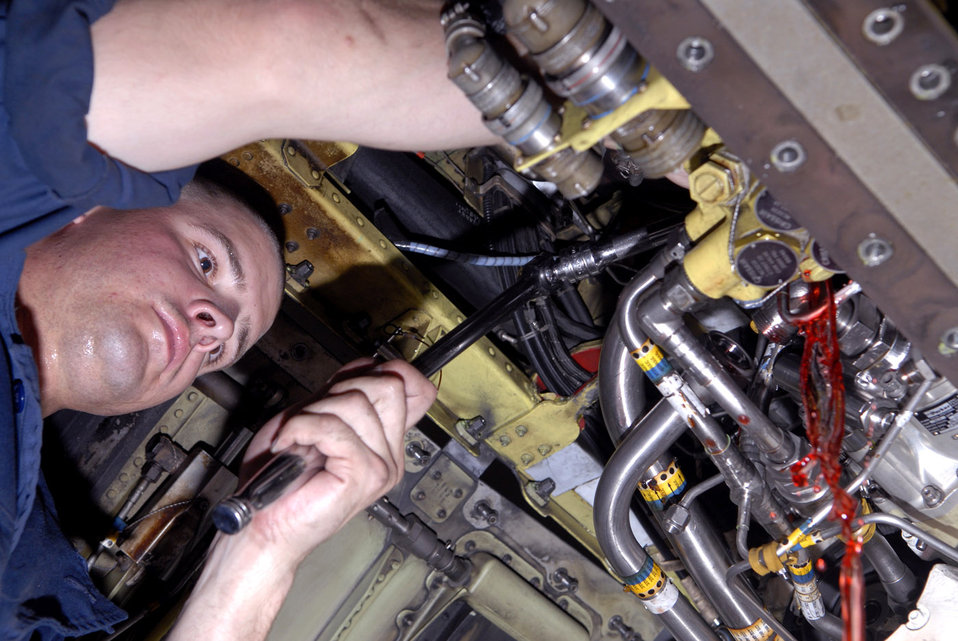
All in a day's work

Hydraulic fluid pours out as Senior Airman Christopher Schulte disconnects a hydraulic pump from an F-16 fighting Falcon at Balad Air Base, Iraq, Oct. 10. The hydraulic pump is one of two hydraulic systems that pressurize all hydraulic fluids in the aircraft. Airman Schulte is assigned to the 332nd Expeditionary Maintenance Squadron.